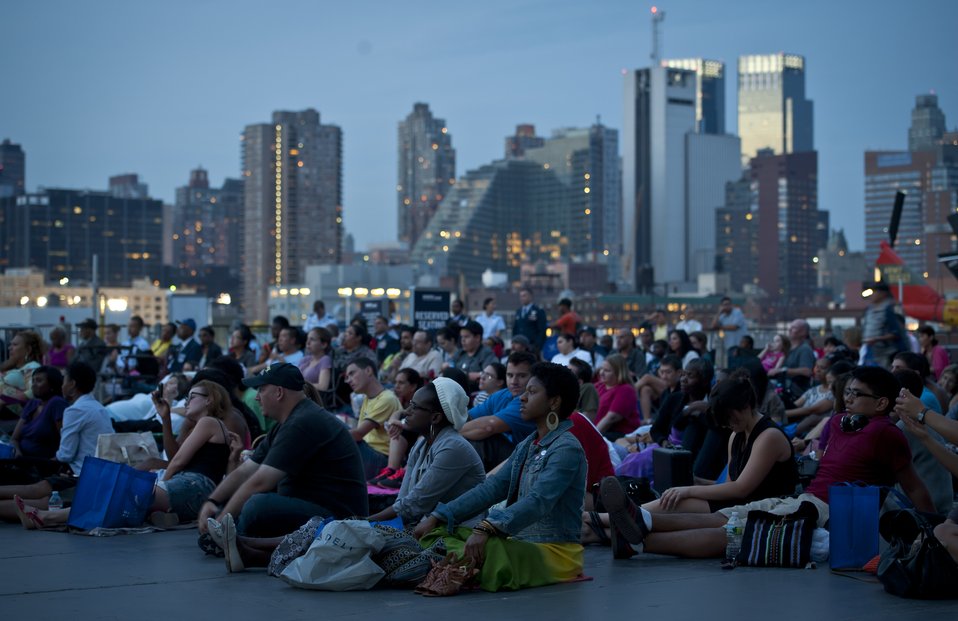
2012 Air Force Week NYC

United States Air Force officials, local residents and tourists wait for the movie, Red Tails, to play at Pier 86 during 2012 Air Force Week in New York City, on August 20, 2012. The movie represented Tuskegee Airman missions in World War II. More than five Tuskegee Airman were present for the event.